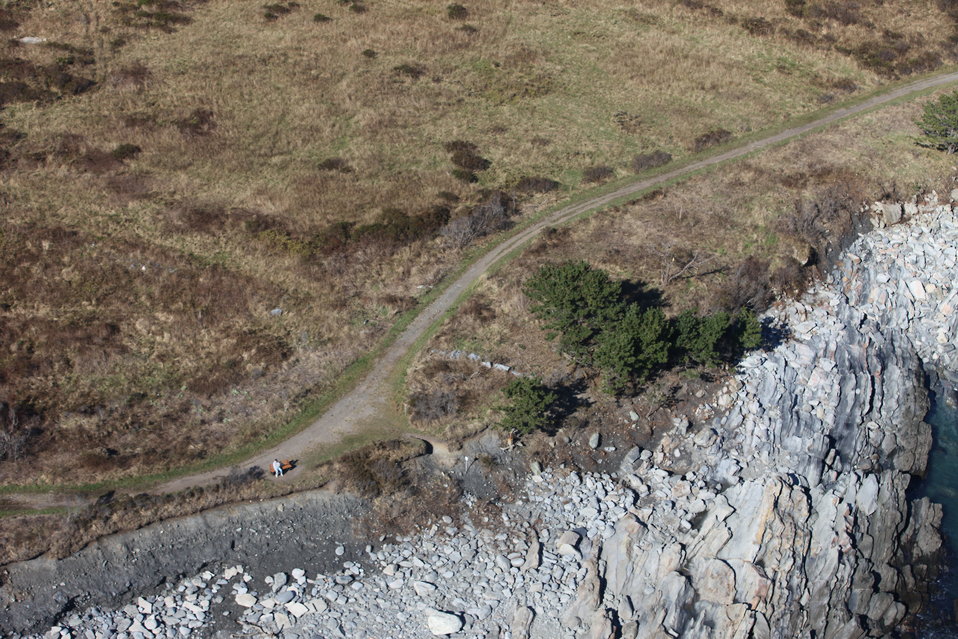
Erosion of trail at Sachuest Point National Wildlife Refuge

Aerial view of trail at Sachuest Point National Wildlife Refuge which is now closer to the edge due to Hurricane Sandy.